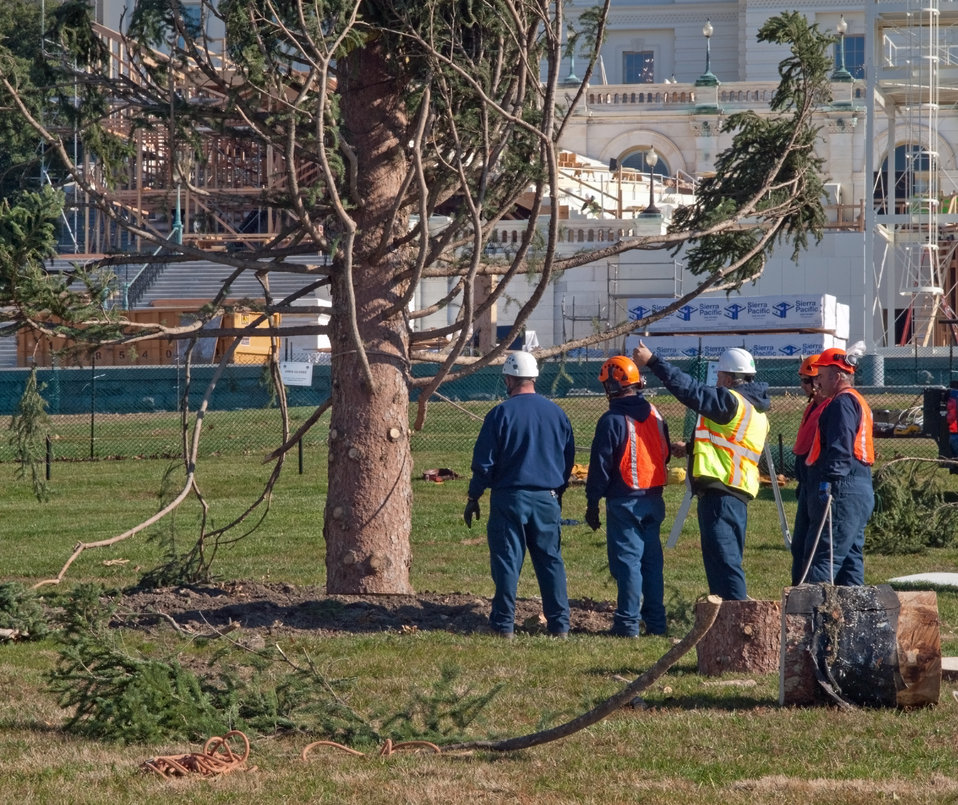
Members of the Capitol grounds crew place the 2012 Capitol Christmas Tree on the west lawn of the Capitol in Washington, D.C. on Nov.26, 2012. The 73-foot Englemann spruce traveled from the White River National Forest in Colorado.